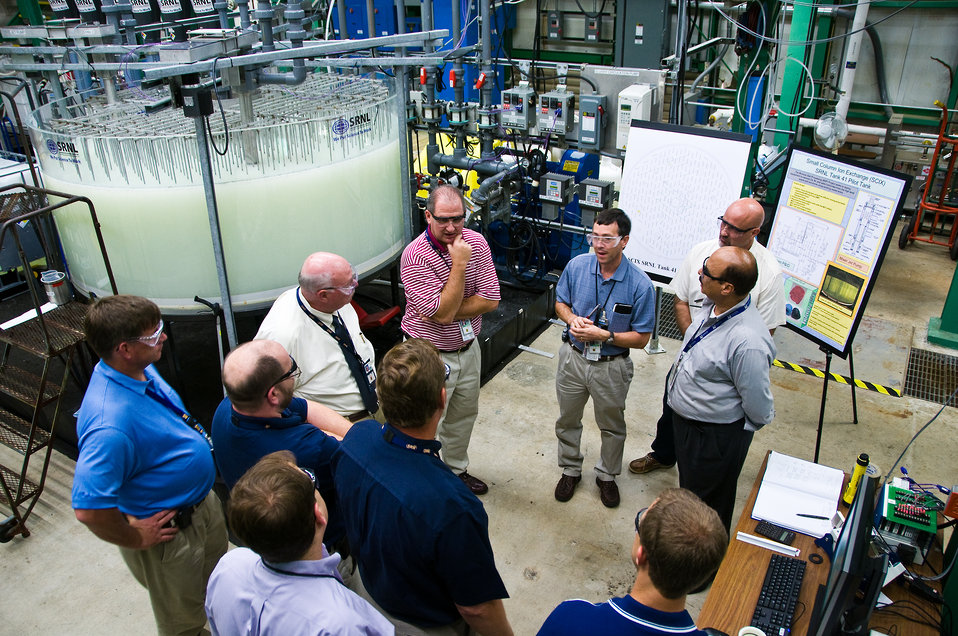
Small Column Ion Exchange (SCIX)

Savannah River Remediation employees review mock ups of SCIX technology at the Savannah River National Laboratory.

Small Column Ion Exchange (SCIX) is a sorbent column system being developed at the Savannah River Site (SRS) in South Carolina to remove cesium, strontium, and select actinides from radioactive salt solutions in waste tanks.